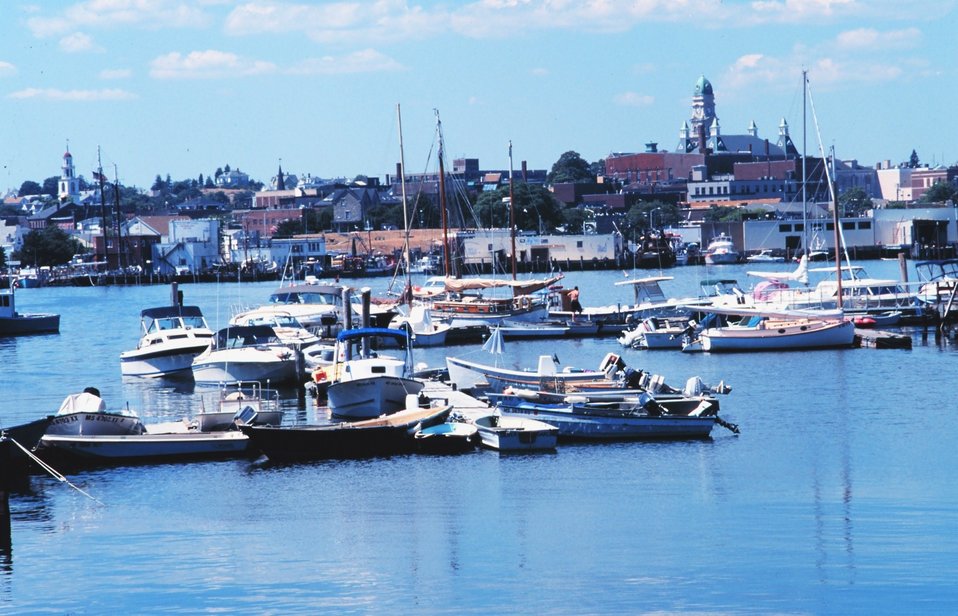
Yachts and workboats intermingling in Gloucester Harbor.